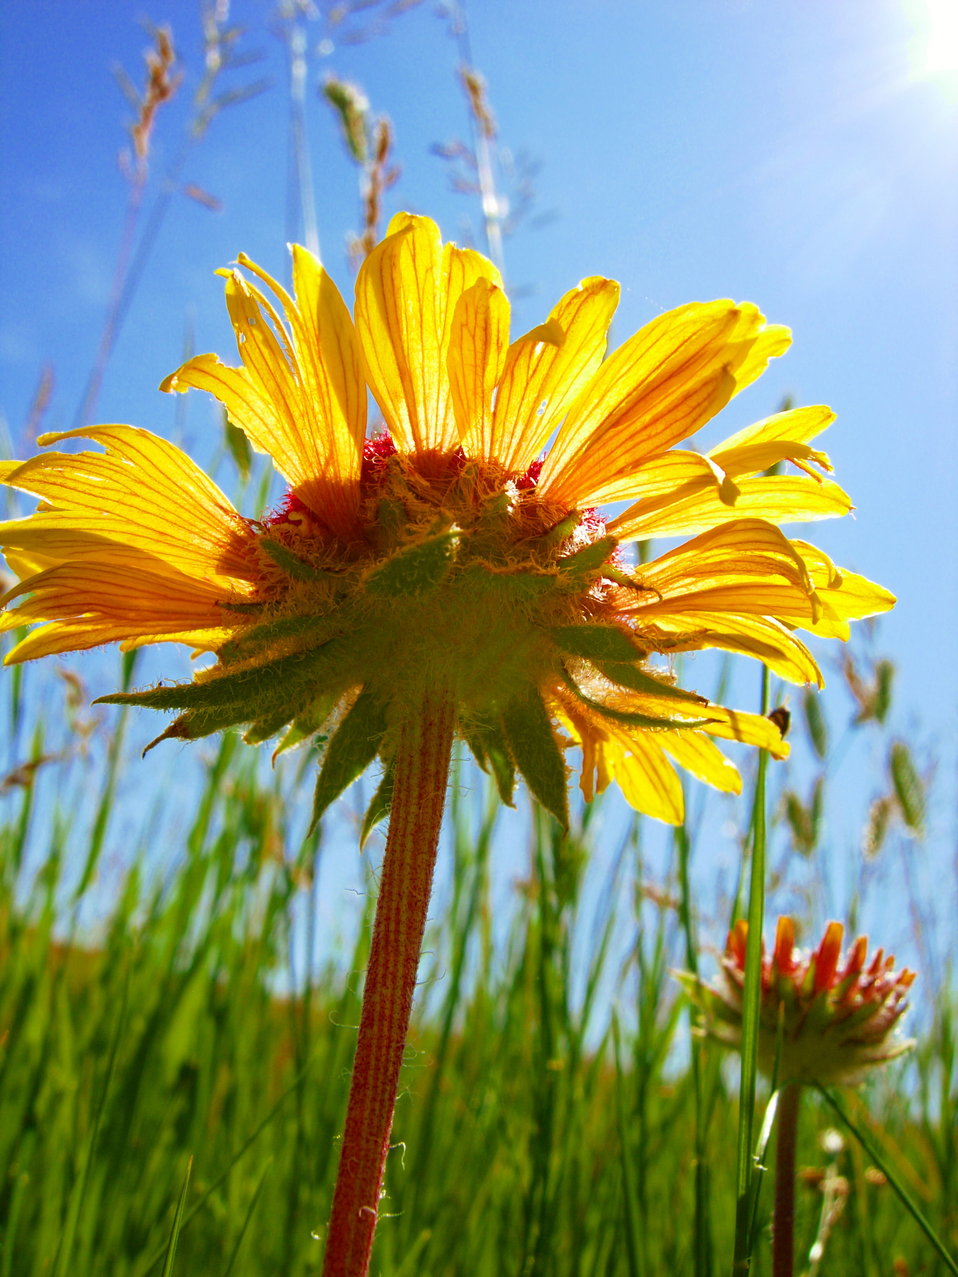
Blanket Flower

The blanket flower is one of the many natives found in bloom on Upper Souris National Wildlife Refuge in North Dakota in the summer.